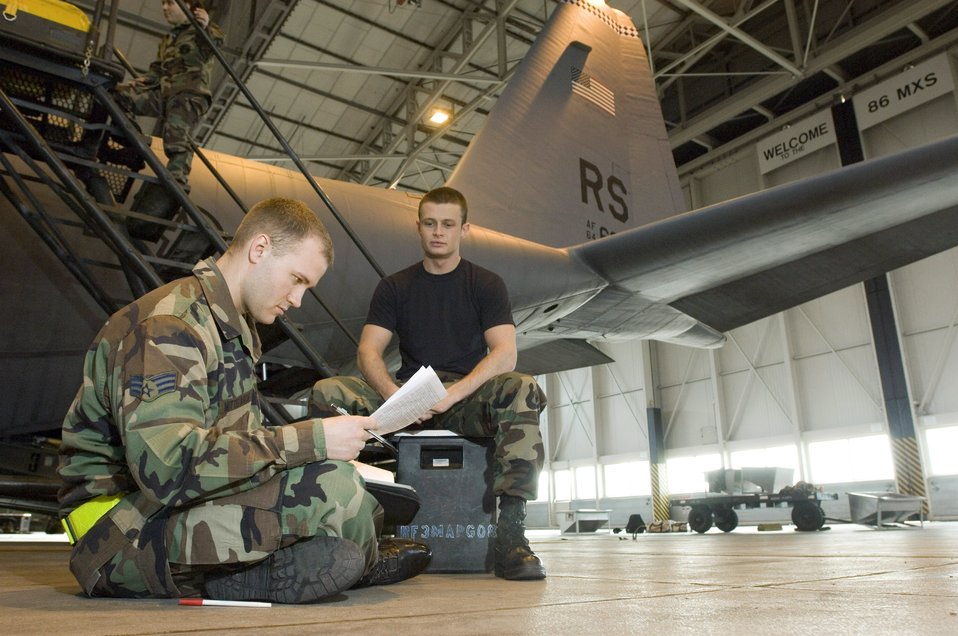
Herc operations

Senior Airman Nate Andrews waits as Senior Airman Brian Mittelbach reviews C-130 Hercules aircraft forms at Ramstein Air Base, Germany, on Monday, March 27, 2006. Airman Mittelbach, of Hamilton, Mass., and Airman Andrews, of Wilmington, N.C., are Hercules crew chiefs with the 86th Aircraft Maintenance Squadron.